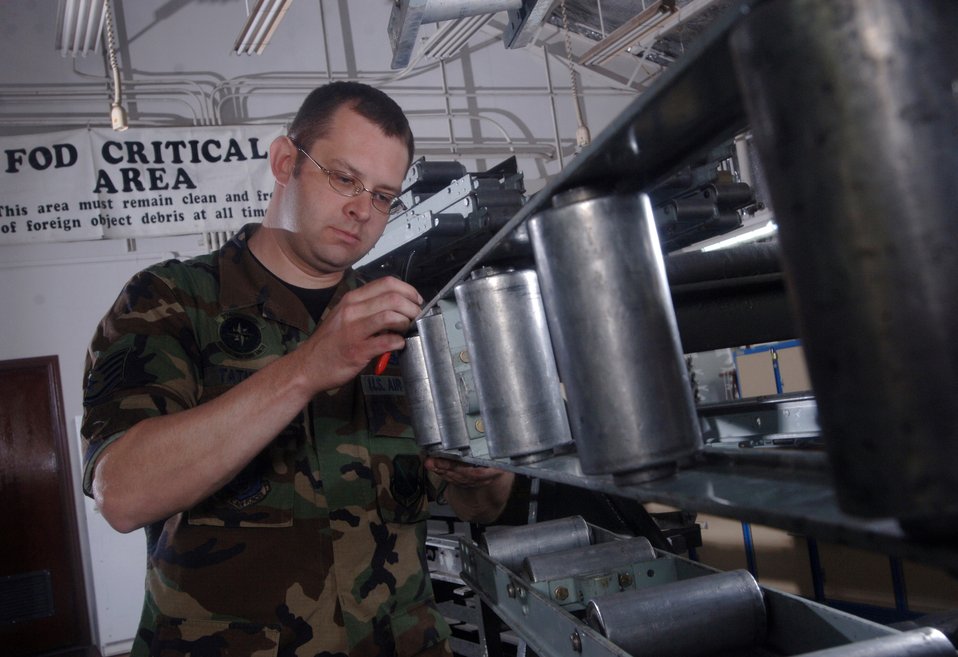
Rail system check-up

Staff Sgt. Elijah Tatman checks a C-130 Hercules roller conveyor for deformities and corrosion during an inspection at Yokota Air Base, Japan, on Wednesday, May 3, 2006. The cargo handling system is inspected at least twice a year. Sergeant Tatman is a C-130 crew chief with the 374th Aircraft Maintenance Squadron.